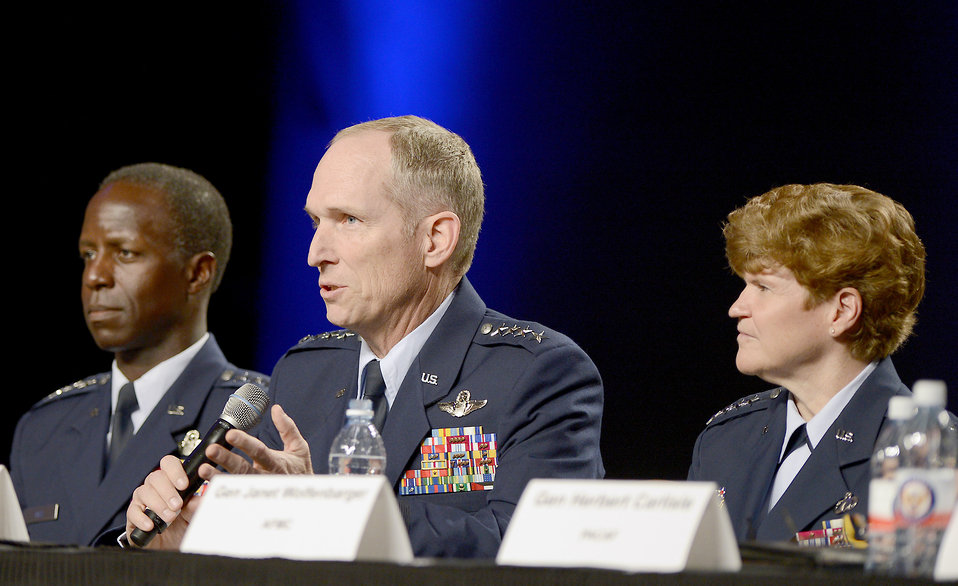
Air Force leaders offer perspectives at four-star forum

Gen. Mike Hostage, commander of Air Combat Command, talks about issues specific to ACC during a 12-member senior leader panel at the Air Force Association's Air and Space Conference and Technology Exposition in Washington, D.C., Sept. 19, 2012.